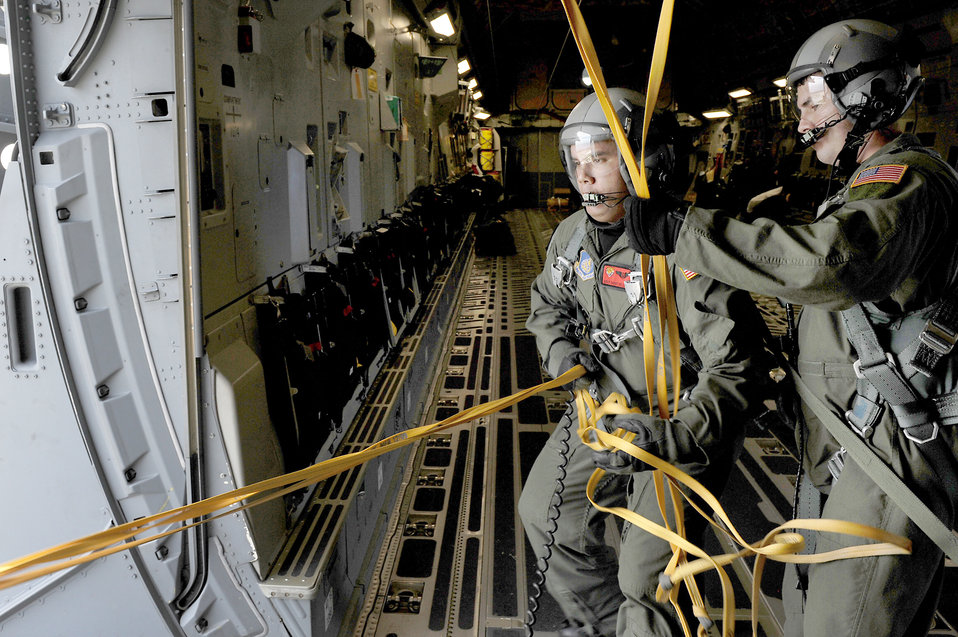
Static-line jumps over Guam

Staff Sgt. Danny Hollister and Senior Master Sgt. Chuck Brown gather static lines after the final three jumpmasters left the aircraft Jan. 13, 2011, over the Andersen Air Force Base, Guam, drop zone during static-line jump proficiency training. The jumpmasters were from the 36th Contingency Response Group at Andersen. The C-17 Globemaster III aircrew was from Joint Base Pearl Harbor-Hickam, Hawaii. Sergeants Hollister and Brown are loadmasters assigned to the 535th Airlift Squadron in Hawaii.